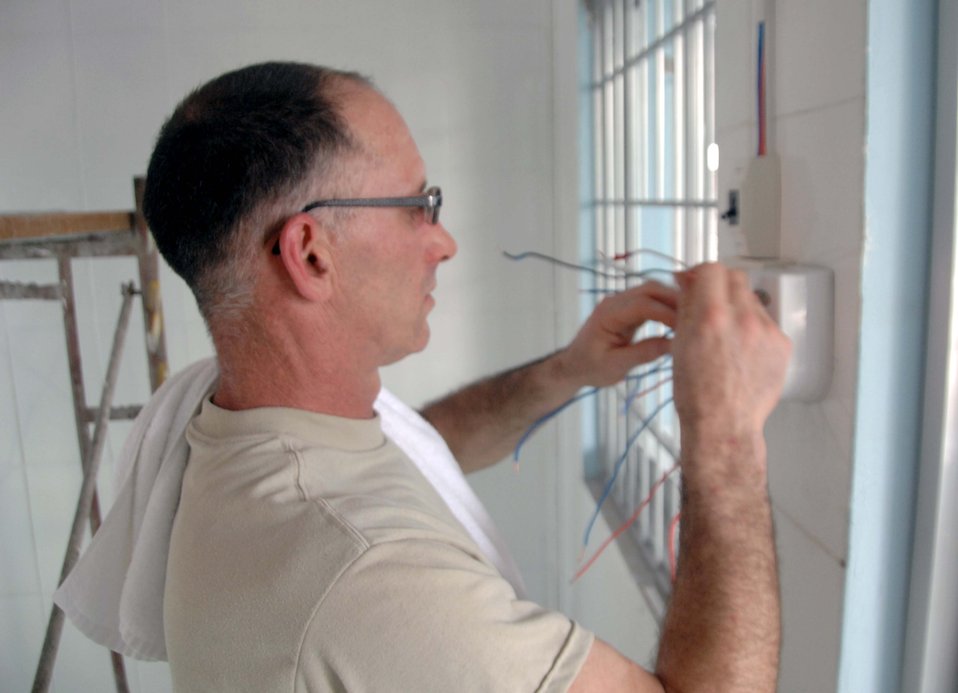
U.S., Vietnam building great relationships says U.S. Consul General

Master Sgt. John Swearingin works on an electrical wiring box at the village medical clinic at Truong Thanh, Vietnam, May 11, 2010, as part of an engineering project for Pacific Angel 10-2. Sergeant Swearingin is from the Alaska Air National Guard's 176th Civil Engineer Squadron in Anchorage.